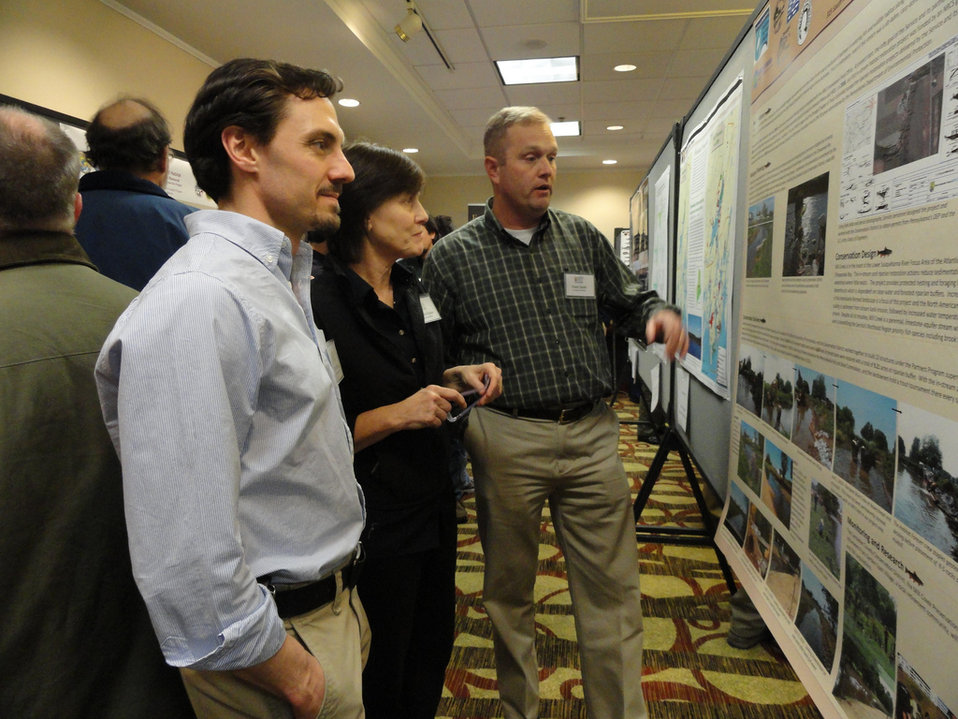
Poster Session

Biologist explaining their poster at the Tuesday night poster session at the Northeast Region Biologists Conference.